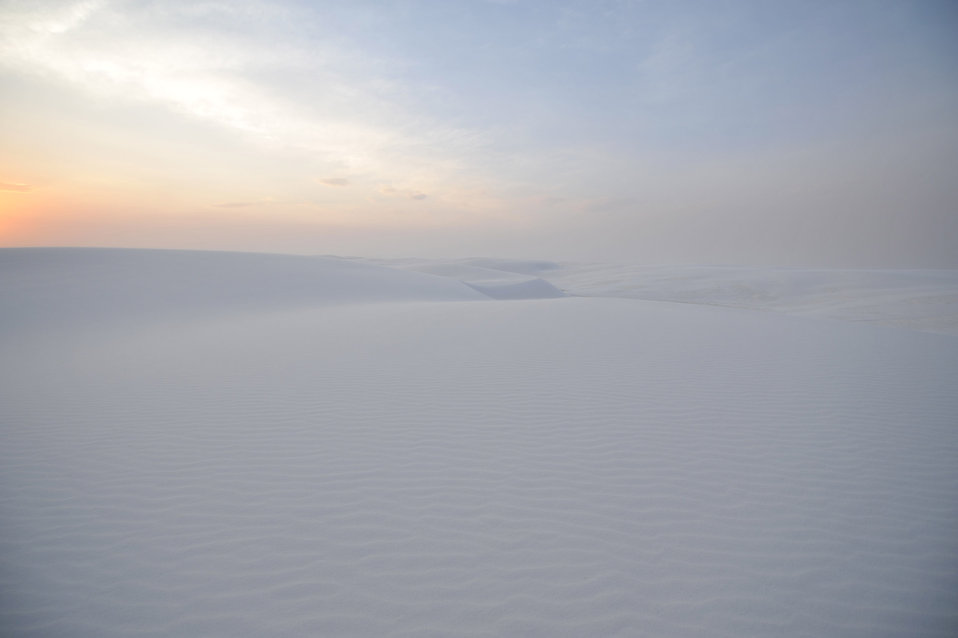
White sands 5

White sands national monument,new mexico.